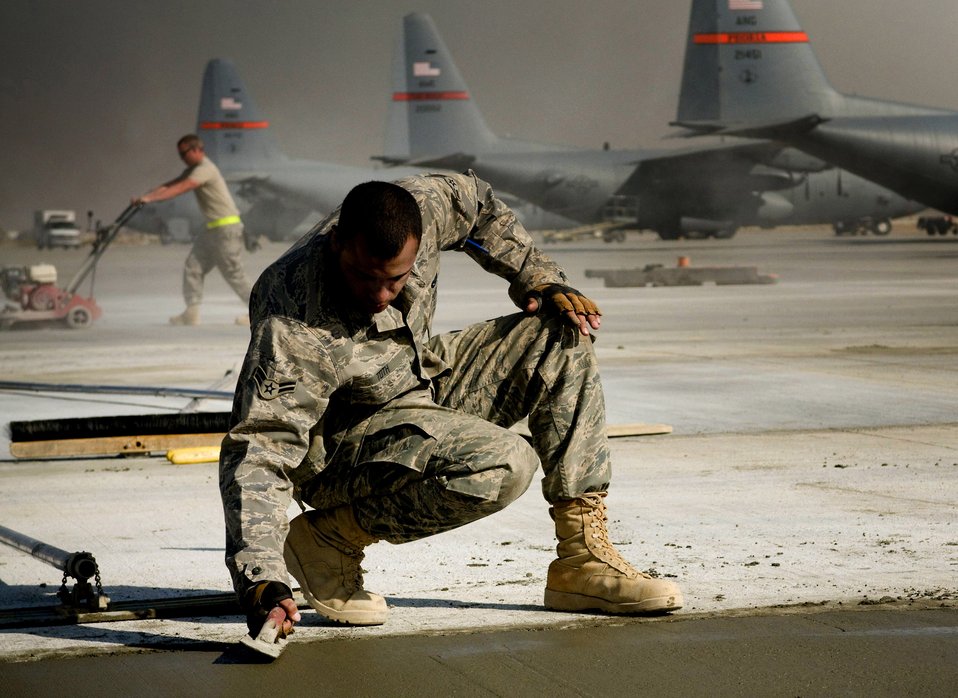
The mission must go on

Airman 1st Class Joshua Toth, a heavy equipment operator with the 455th Expeditionary Civil Engineer Squadron, smoothes wet concrete on Thanksgiving Day, Nov. 27, at Bagram Airfield, Afghanistan. Airman Toth is from Clayton, N.J.